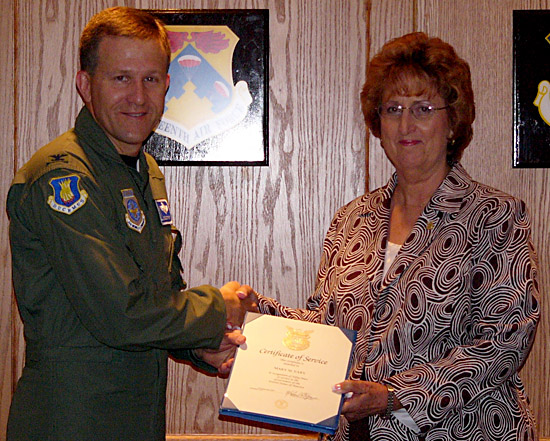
50 years of civil service

Col. John Zazworsky presents Mary Eary, the 22nd Mission Support Group executive secretary at McConnell Air Force Base, Kan., with a certificate of service and pin for her 50 years of service as a civil service member. Colonel Zazworsky is the acting 22nd Air Refueling Wing commander.